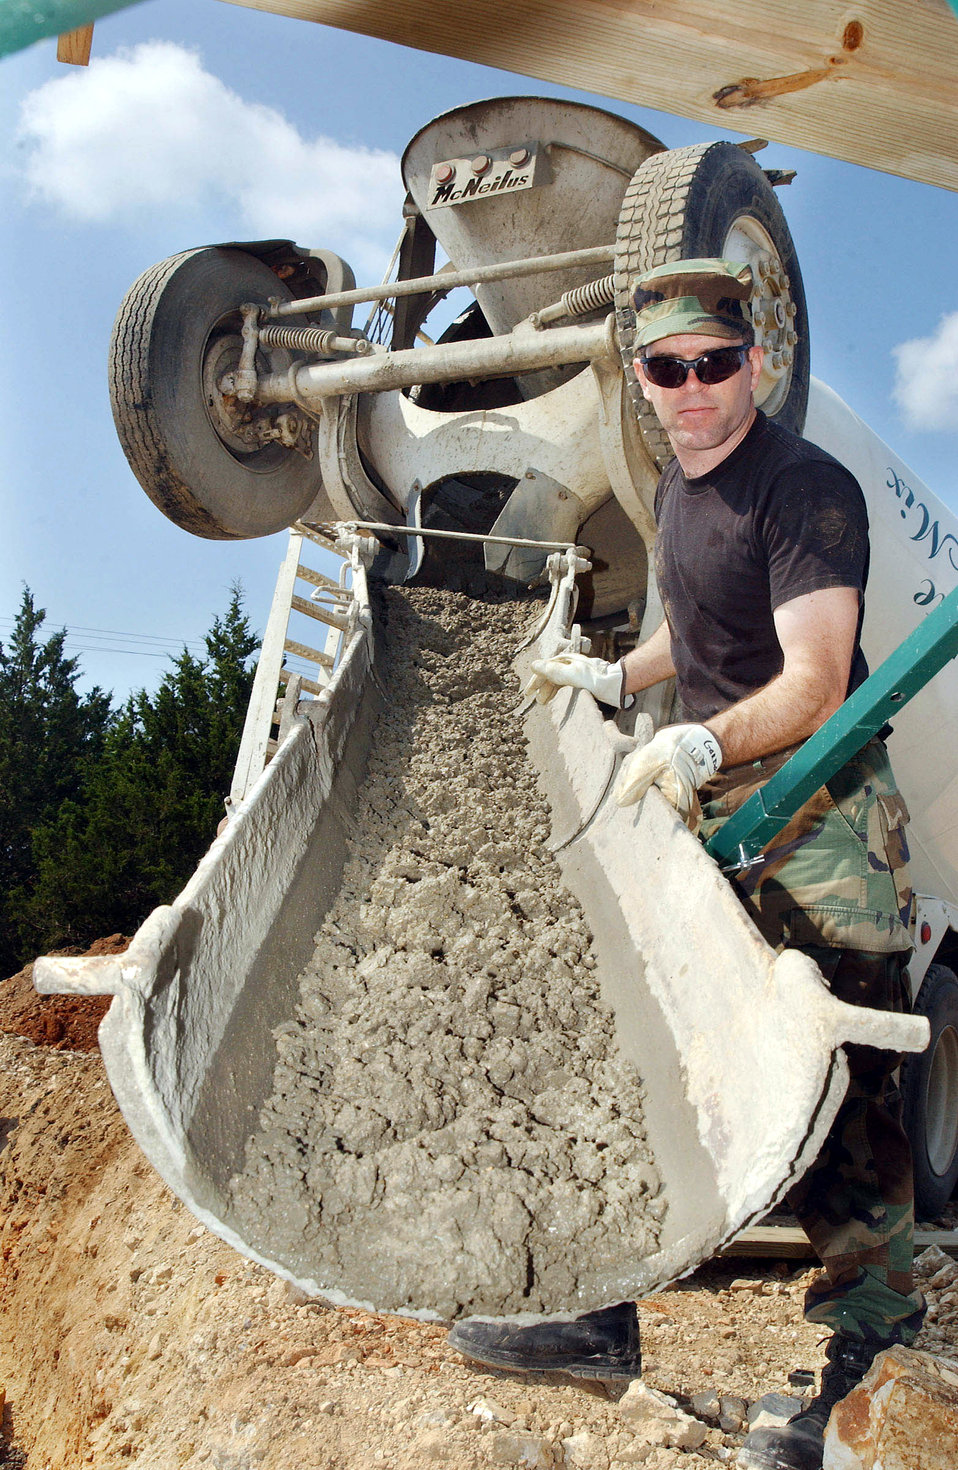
Dumping cement

FORT LEONARD WOOD, Mo. -- Tech. Sgt. Andrew Gordon oversees the pouring of concrete to protect an electrical conduit leading to a building here May 11. Sergeant Gordon is an electrician with the 121st Civil Engineer Squadron.